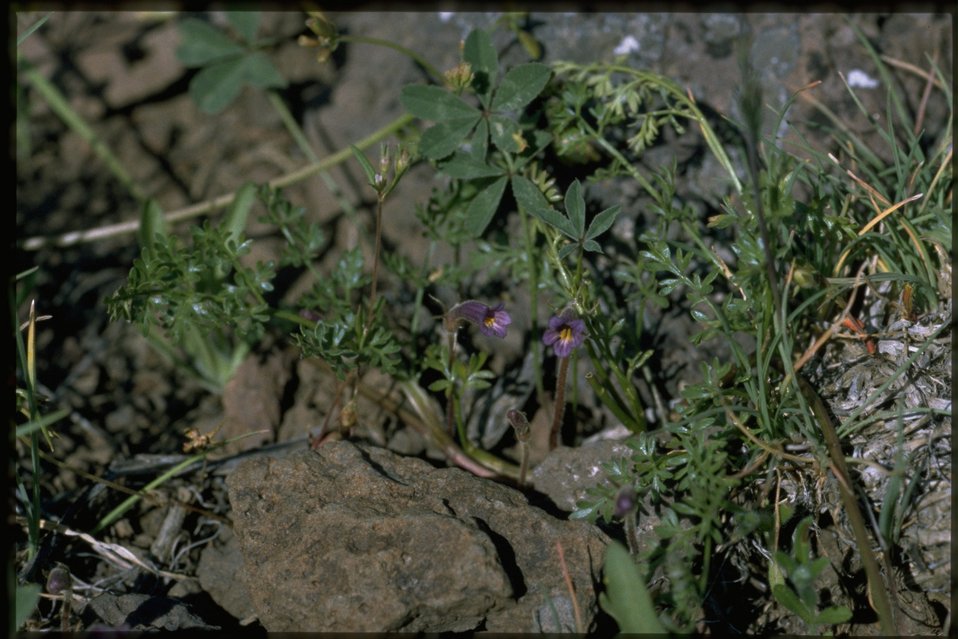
Farshot of Naked Broomrape wildflowers (Orobanche Uniflora).